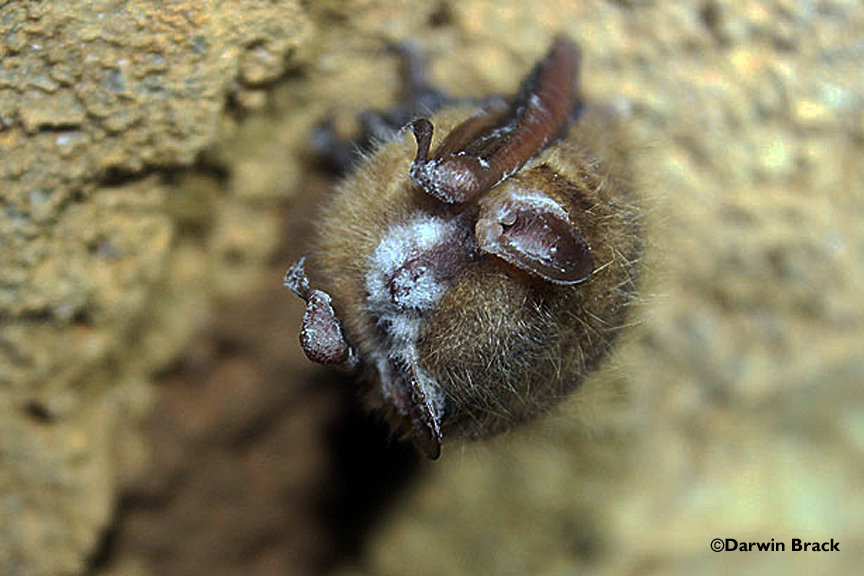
Tri-colored bat with visible WNS symptom